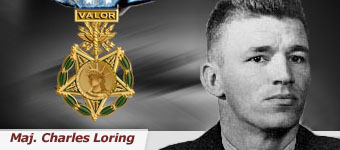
Maj. Charles Loring

Maj. Charles J. Loring was hit repeatedly by ground fire during his dive while attacking enemy gun positions. Instead of withdrawing, Major Loring aimed his F-80 Shooting Star directly at the gun positions and crashed into them, destroying them upon impact. Major Loring received the Medal of Honor for his sacrifice.